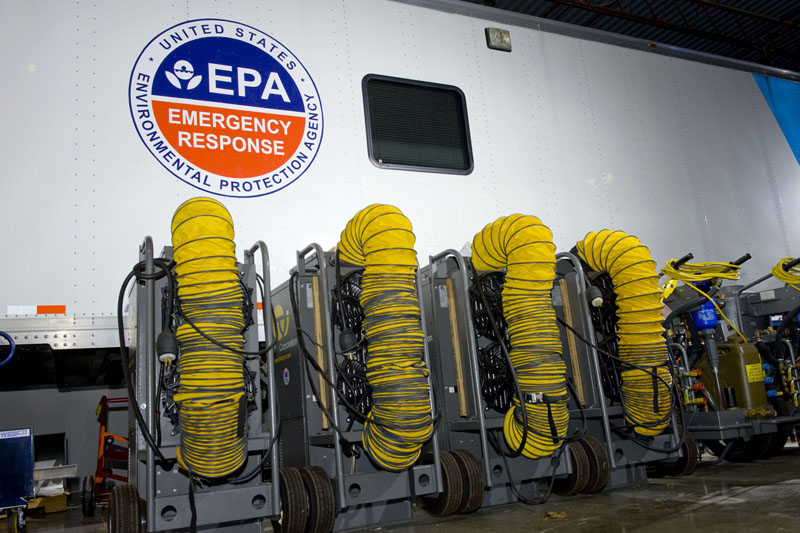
Mobile response vehicle and water heaters.